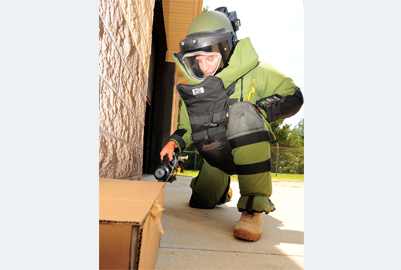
EOD

100611-F-8454M-027 SHAW AIR FORCE BASE, S.C. -- Senior Airman Joshua Labott, 20th Explosive Ordinance Disposal apprentice, demonstrates techniques on disabling a suspicious package June 11, 2010. Airman Labott received the Bronze Star with the